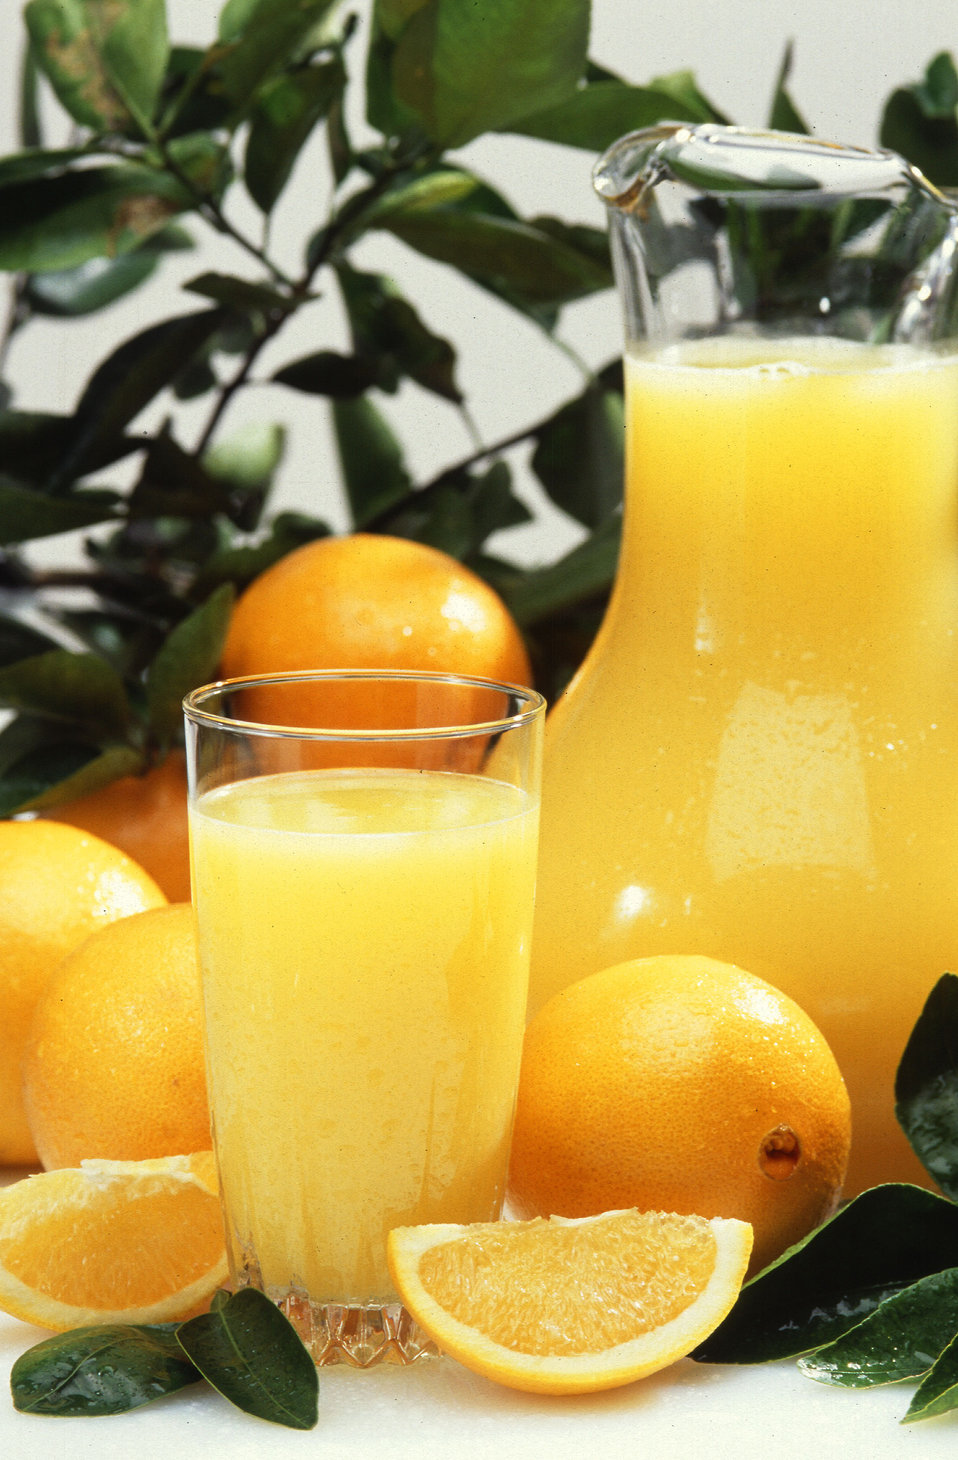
4 Delicious Citrus

Citrus fruit makes delicious and healthy drinks. Citrus greening disease (Huanglongbing (HLB)) is one of the most severe plant diseases in the world and has the potential to eliminate the citrus industry. Once a tree is infected with the disease, there is no known cure. Citrus greening is spread by a bug the size of the head of a pin known as the Asian citrus psyllid (ACP). When the bug feeds on an infected tree, it becomes a carrier, spreading the disease from one tree to another. Although the disease is not harmful to humans, fruit from infected trees are not suitable for consumption because of their green color, misshapen appearance and bitter taste.